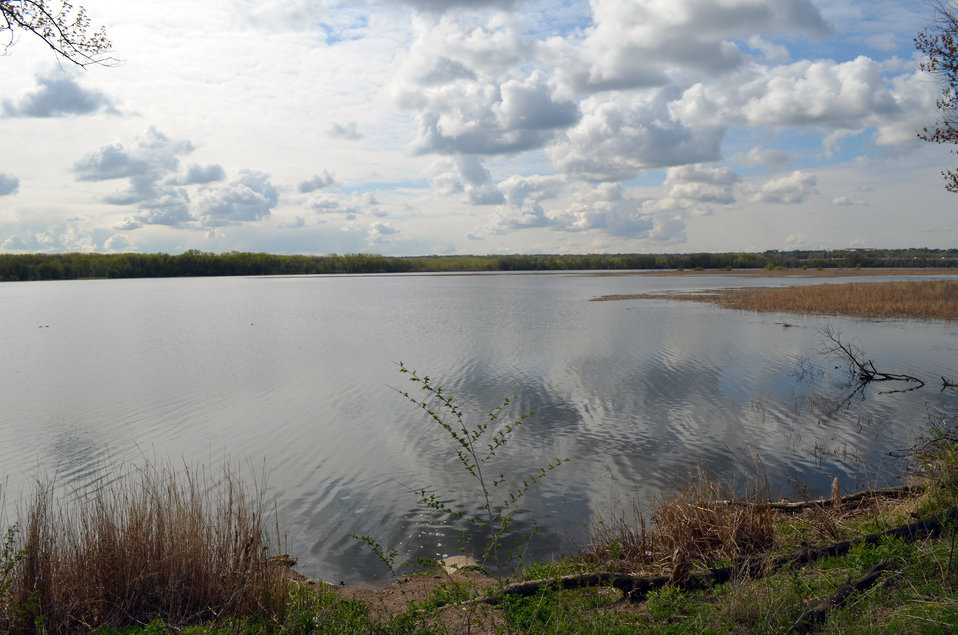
Bass Ponds - Minnesota Valley National Wildlife Refuge